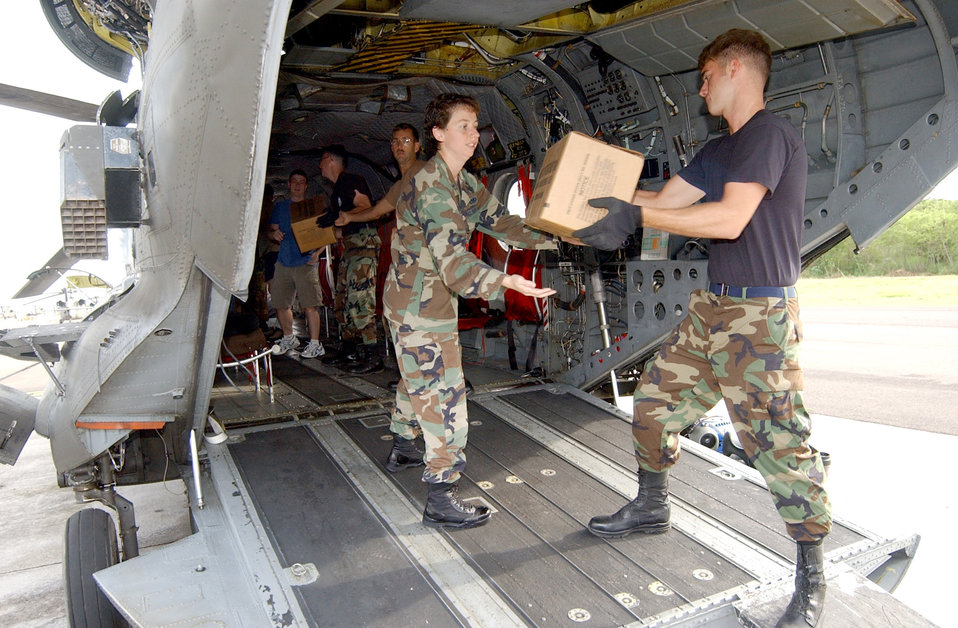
Medics help poisoning victims in Nicaragua

First Lt. Kristina Evener and Senior Airman Ben Hastings help servicemembers load supplies into a CH-47 Chinook helicopter Sept. 10. Airmen and Soldiers responded to a request for help from the U.S. Embassy in Nicaragua after more than 30 people died in the city of Leon from a toxic batch of moonshine laced with methanol.